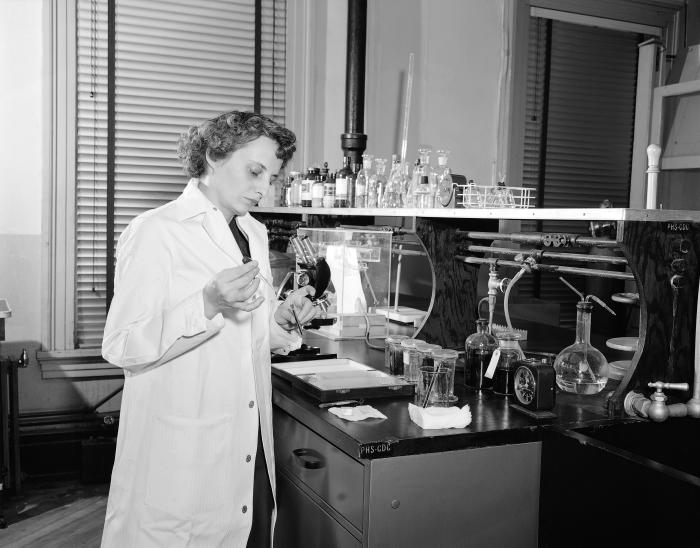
This historic 1955 image depicted Dr. Marguerite Candler, as she was performing an experimental analysis, while in her Centers for Disease Control's experimental hematology laboratory.